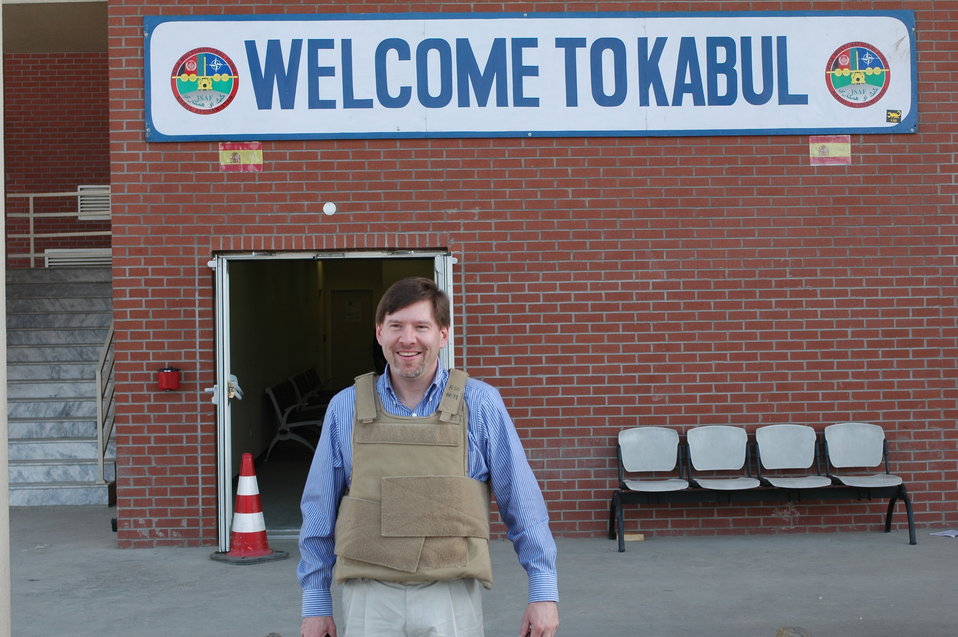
CODEL Berman